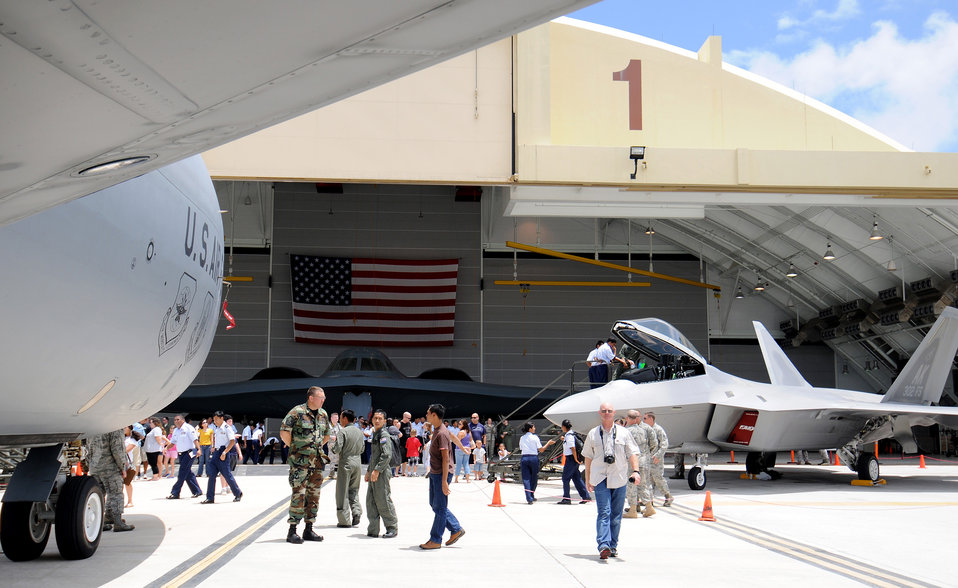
Andersen officials give up-close view of F-22, B-2

Spectators explore aircraft during the March 28 open house at the Andersen Air Force Base, Guam. The event showcased the fire unit, explosive ordnance disposal unit, a K-9 unit, a KC-135 Stratotanker, an F-22 Raptor, and a B-2 Spirit.